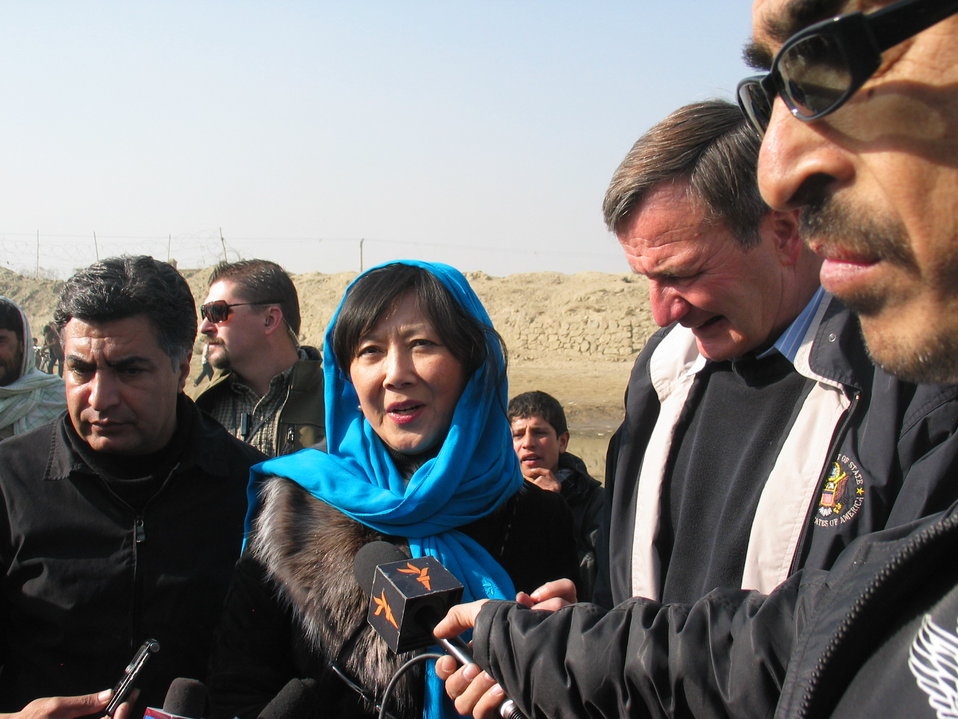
Kabul River Bridge Renovation, December 3, 2010